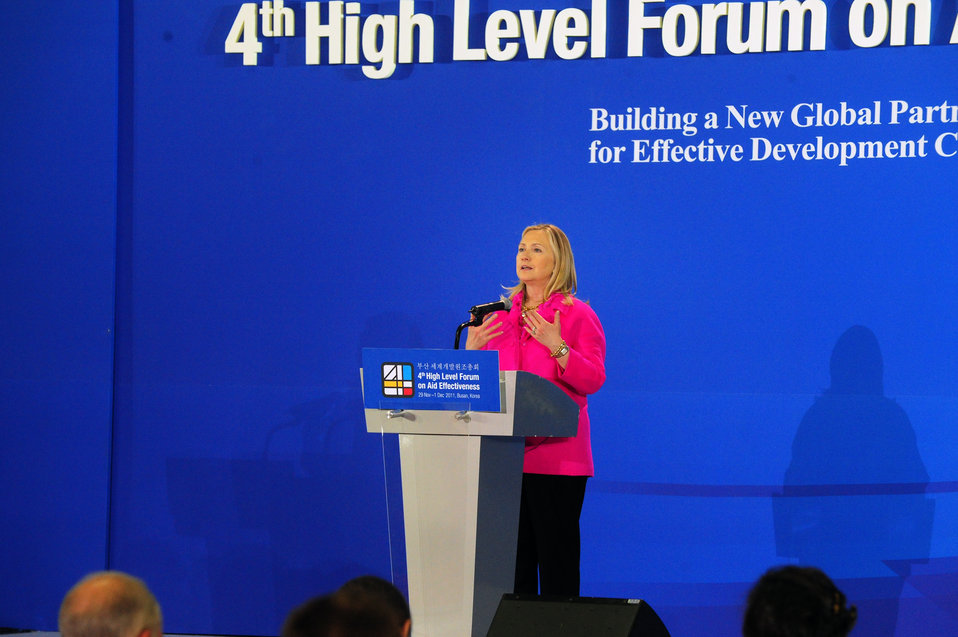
Secretary Clinton Holds a Press Conference

U.S. Secretary of State Hillary Rodham Clinton holds a press conference at the Fourth High-Level Forum on Aid Effectiveness (HLF4) in Busan, South Korea, on November 30, 2011.